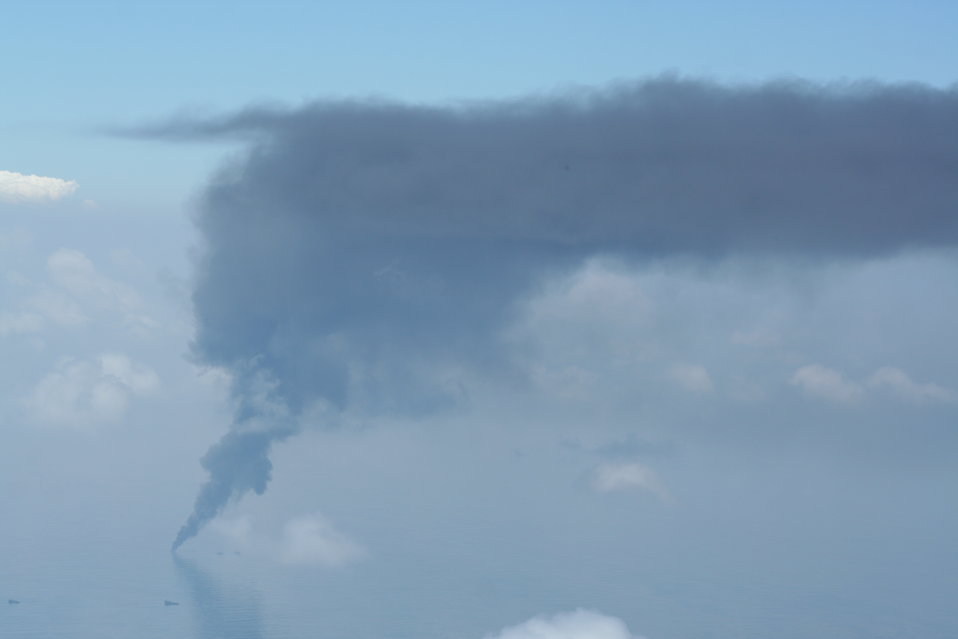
May 6 Open Water Oil Burn

May 6, 2010 - Open-water oil burn

Photo taken from U.S. EPA's Airborne Spectralphotometric Environmental Collection Technology (ASPECT) aircraft.